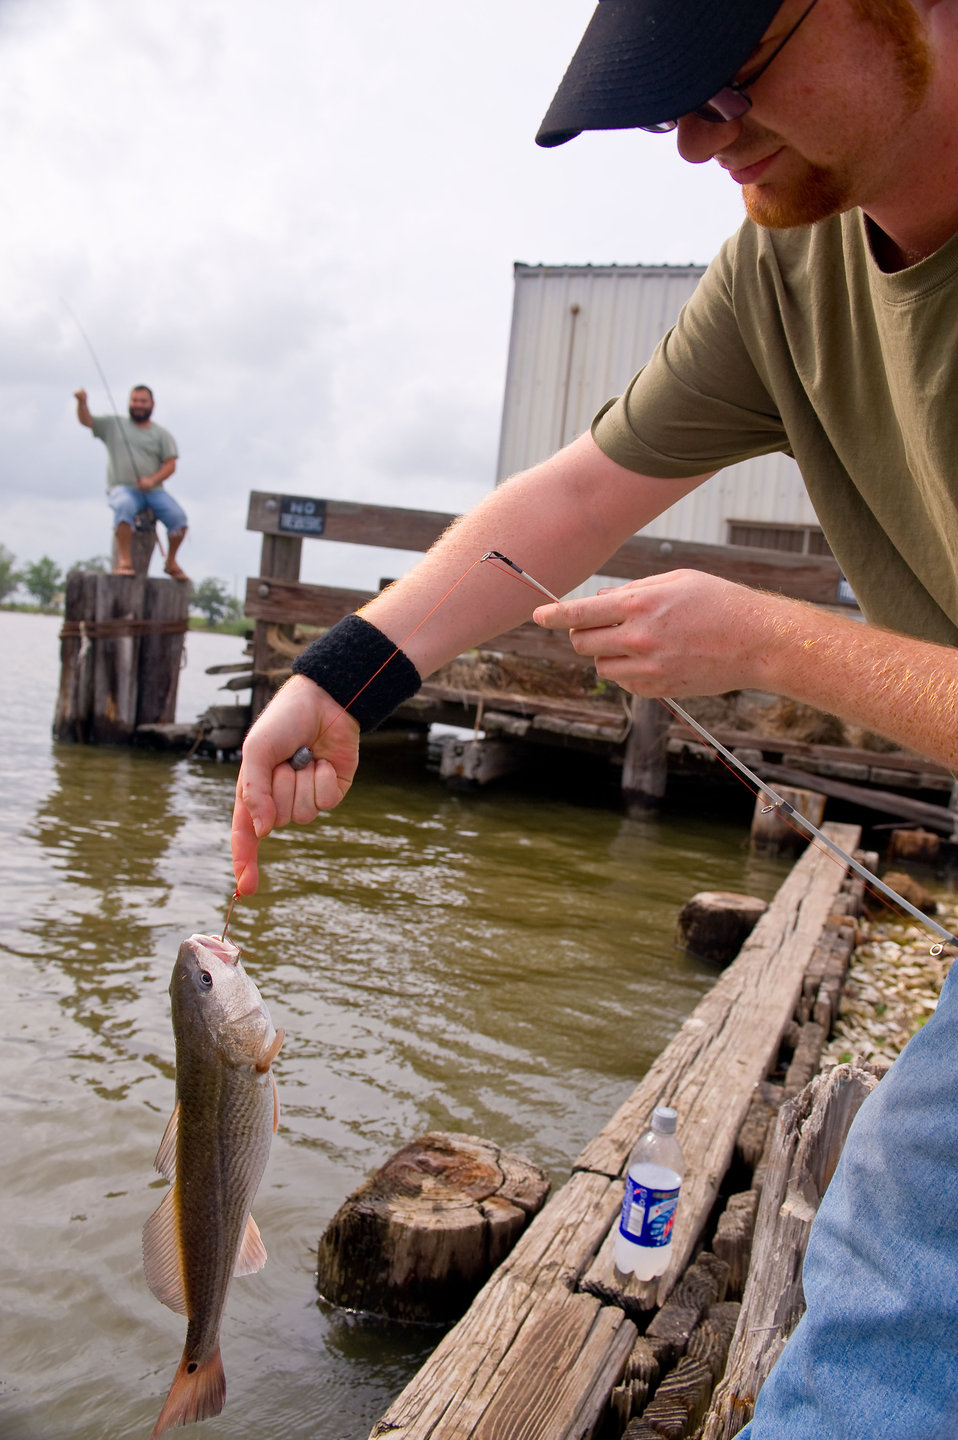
Local fisherman hope for the best.

May 13, 2010. Whether it's a source of family income, a livelihood passed down from generations, or a way to catch up with friends, the safety of fish stocks in the Gulf of Mexico is on everyone's minds.